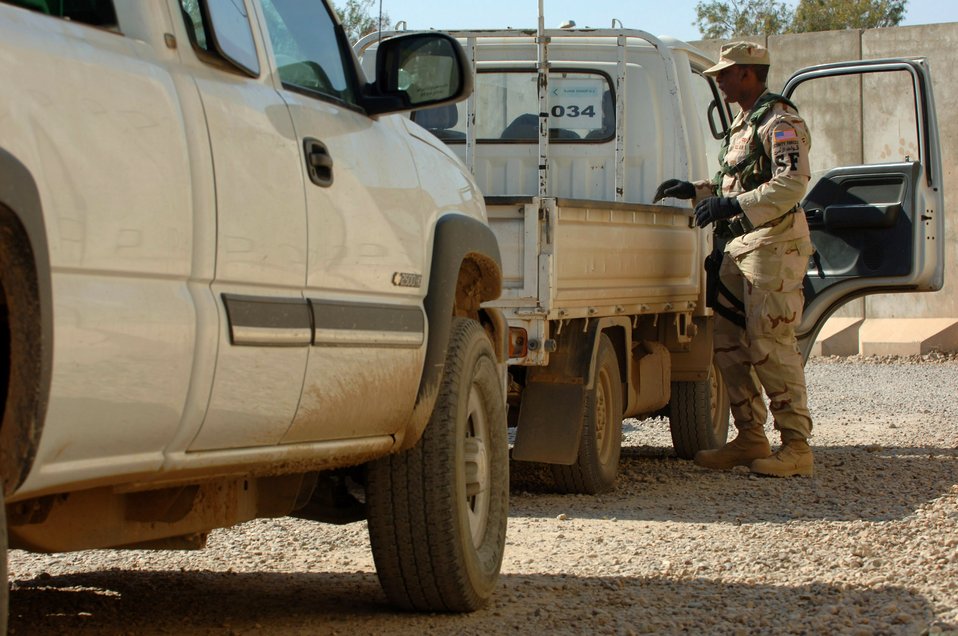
Security forces Airmen protect Iraq's combat airpower hub

Airman 1st Class Marquis Garvin searches a third-country national contractor's vehicle for illegal items such as weapons and hand-drawn maps that could be used against military forces at Balad Air Base, Iraq, Feb. 21. Airman Garvin is assigned to the 332nd Expeditionary Security Forces Squadron.